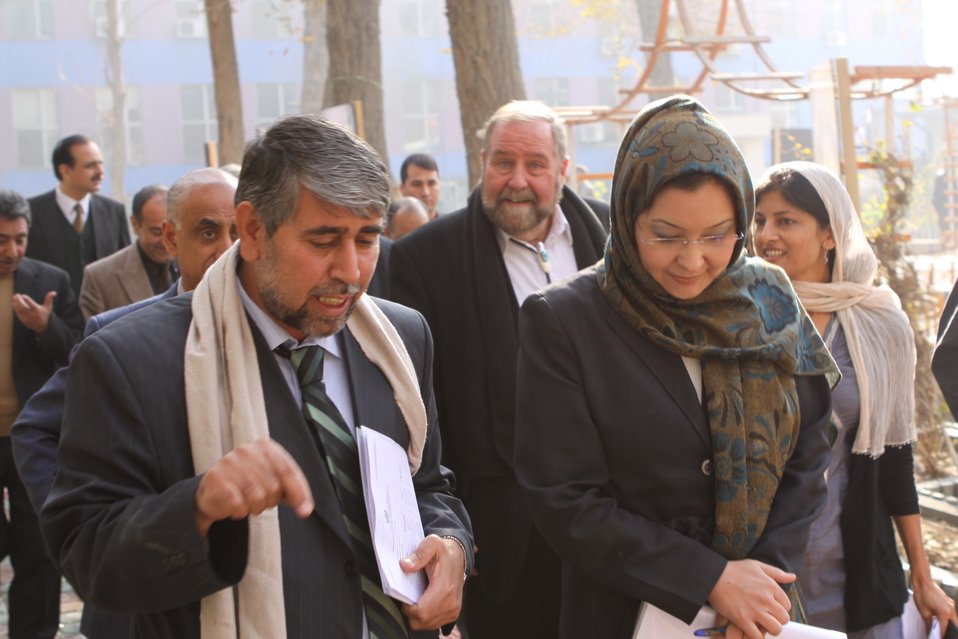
Community Health Workers Celebrated

Kabul, Afghanistan | December 5, 2010 — In support of the United Nations designated International Volunteer Day for Economic and Social Development, Afghanistan’s Ministry of Public Health celebrated its annual Community Health Worker Day today. Acting Minister of Public Health Dr. Suraya Dalil, USAID Senior Deputy Mission Director Robert Hellyer, other government officials, and international donors joined in recognizing the critical contribution of community health workers in Afghanistan and encouraging them to continue their voluntary support to their communities.
The event praised the contributions of the more than 22,000 volunteers throughout the country who deliver community level health-education, counseling, and services out of village health posts located in private homes. The Ministry of Public Health envisioned that community-based healthcare programs will actively encourage communities and families to adopt healthy lifestyles and behaviors, and provide families access to high quality and socially acceptable preventative medicine and life-saving services.
“We have 22,000 community health workers in Afghanistan that are able to implement the basic and standard medicines. They all have been trained through a job description,” said Minister Dalil. Addressing the health workers, she added, “I am proud and feel powerful that I have people like you.”
USAID-funded health projects collaborate closely with the Ministry of Public Health to improve the health and nutritional status of Afghans, provide quality primary healthcare, and promote healthy behaviors at the community and household-levels. USAID supported the training of more than 9,000 of the volunteer community health workers currently working in Afghanistan.
“On behalf of the American people, I congratulate the Community Health Workers for their diligence to gain the skills and knowledge necessary to serve their communities in this important role,” said USAID Senior Deputy Mission Director Hellyer. “USAID strongly supports community based health care and believes that quality community-based health services are essential to reaching Afghanistan’s Millennium Development Goals.”
To support the Basic Package of Health Services, USAID assisted in developing the community health worker training manual, helped train community health worker supervisors and master-trainers, facilitated in-service training, and produced and developed reporting tools, job aids, and education materials.